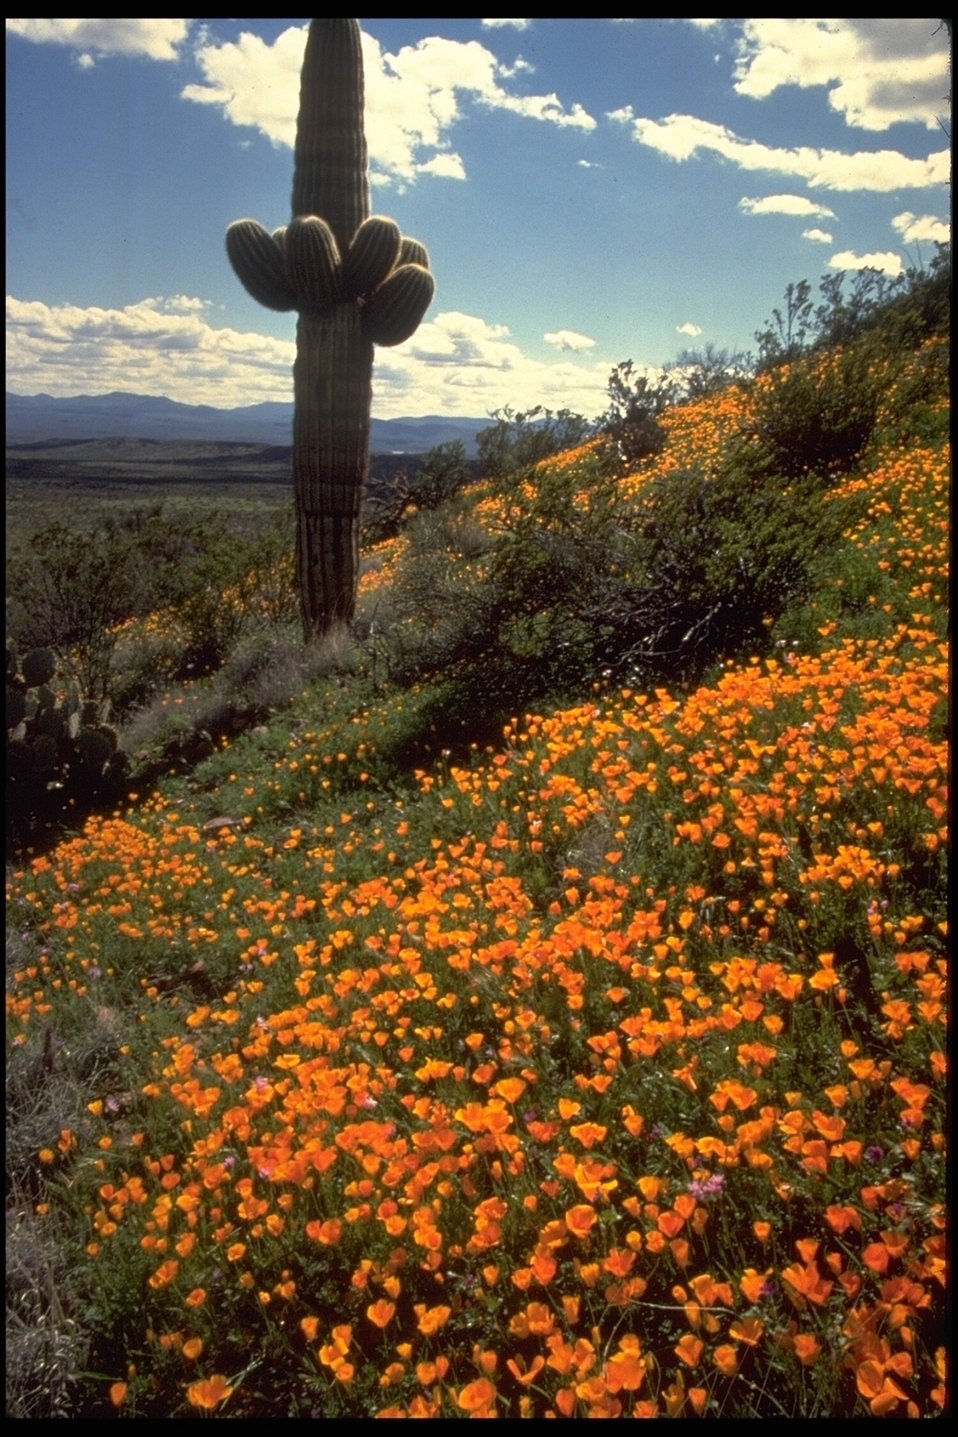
A 15-mile segment of Bonita Creek is part of a special area designated by Congress. Along with 23 miles of the Gila River, this creek is part of the Gila Box Riparian National Conservation Area. Popular for birding and picnicking opportunities, the area is located near Safford, Arizona.